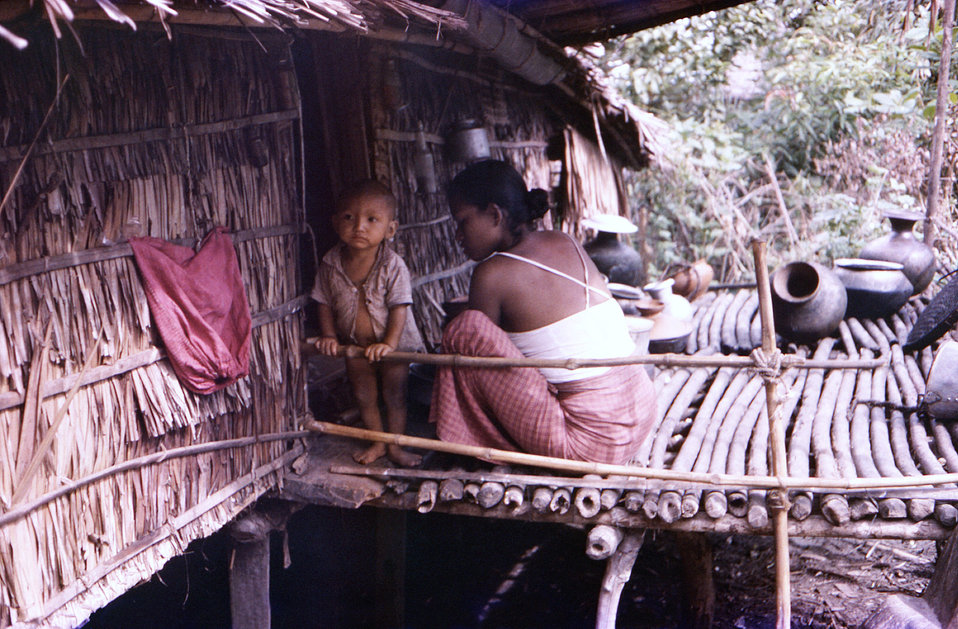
This October, 1975 photograph depicted a Burmese Buddhist woman caring for her child in a Patuakhali District, Marmas village, in the country of Bangladesh. The Buddhists, otherwise known as Marmas, migrated to this region of the World from ancient Burma, which is now known as Myanmar.